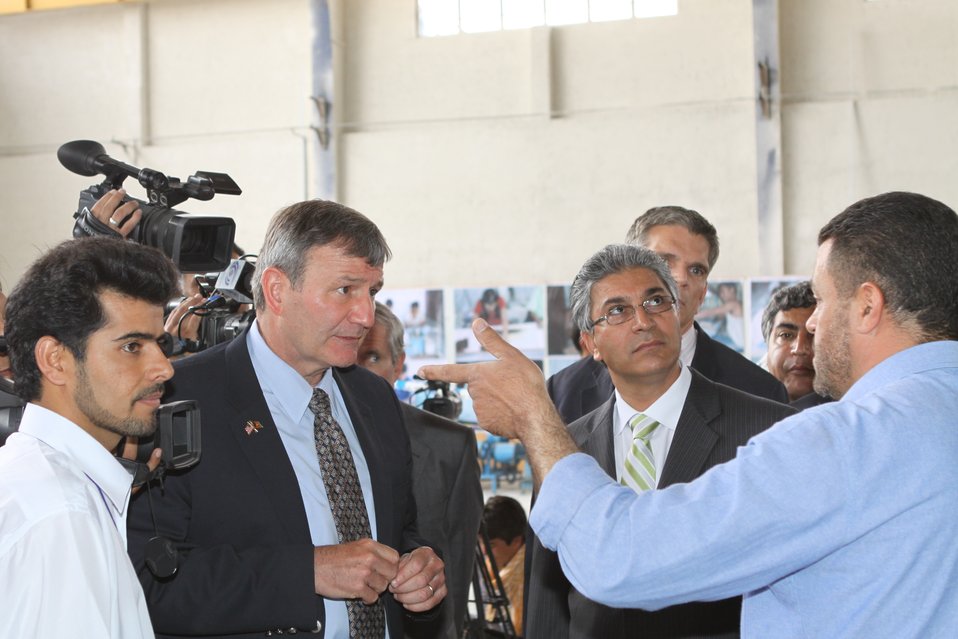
100525 Hirat Marble Conference 415